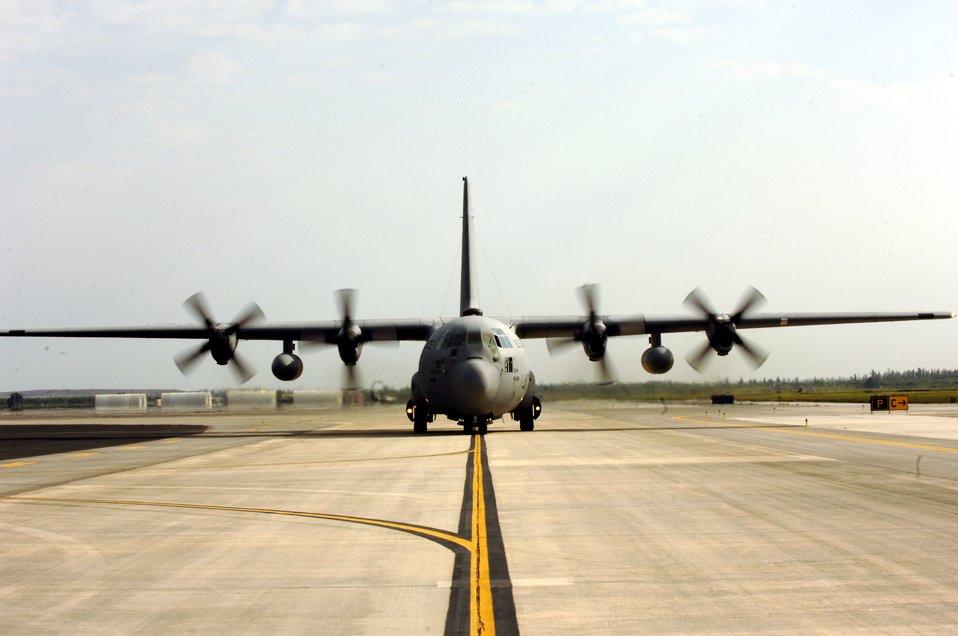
Flooded Bolivia gets humanitarian relief

A C-130 Hercules arrives at Homestead Air Reserve Base, Fla., March 4 to be loaded with supplies. U.S. Southern Command, in cooperation with the U.S. Agency for International Development, is delivering the supplies in response to devastating floods in Eastern Bolivia.